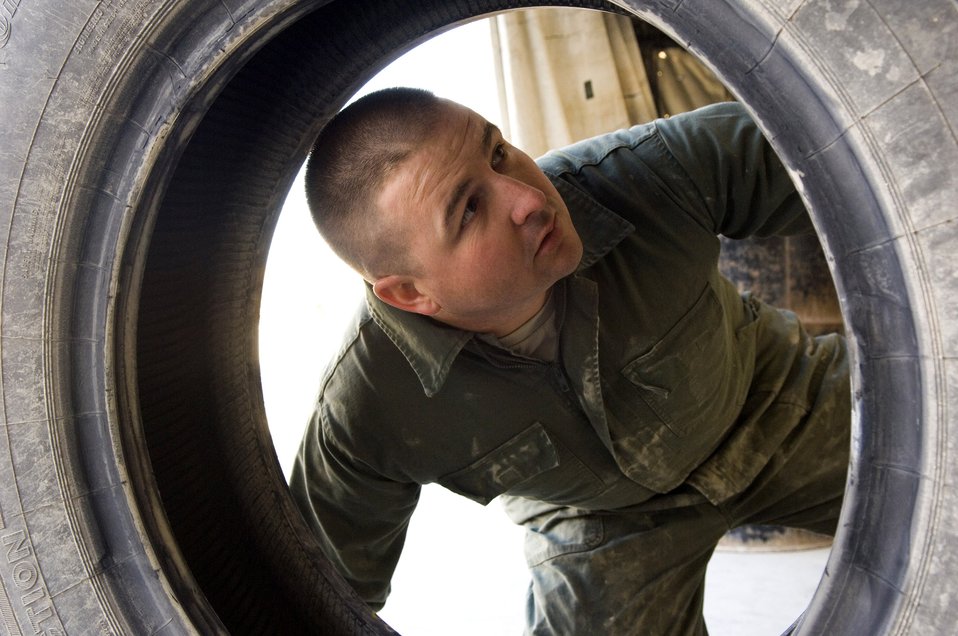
Air Force engineers improve Marine quality of life in Iraq

Senior Airman Matthew Byrd inspects a punctured tire Nov. 22 at Al Asad Air Base, Iraq. Airman Bird patched the tire to use it as a spare. Airman Byrd, a 557th Expeditionary REDHORSE vehicle maintenance technician, is deployed from Barksdale Air Force Base, La.